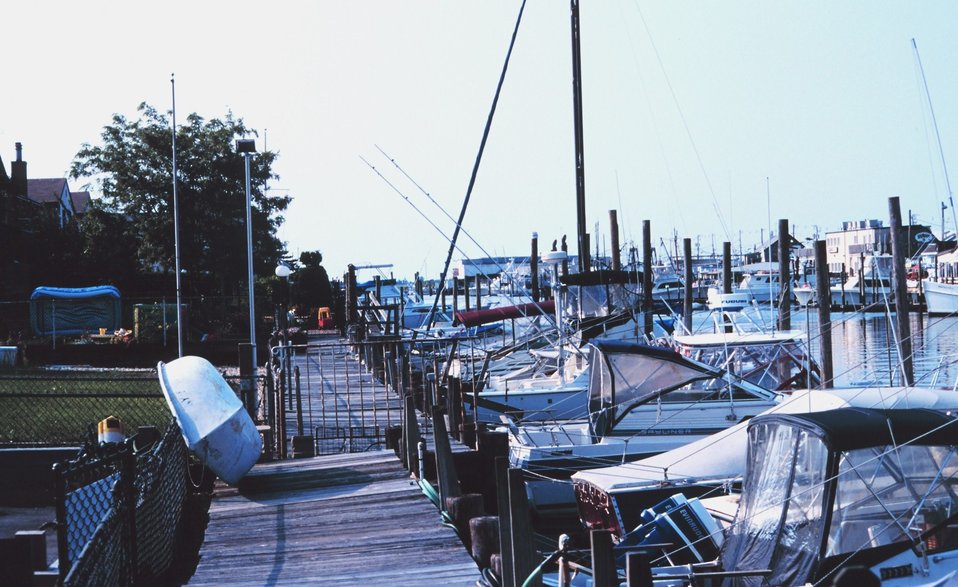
Backyard boat slips on the Woodcliff Canal